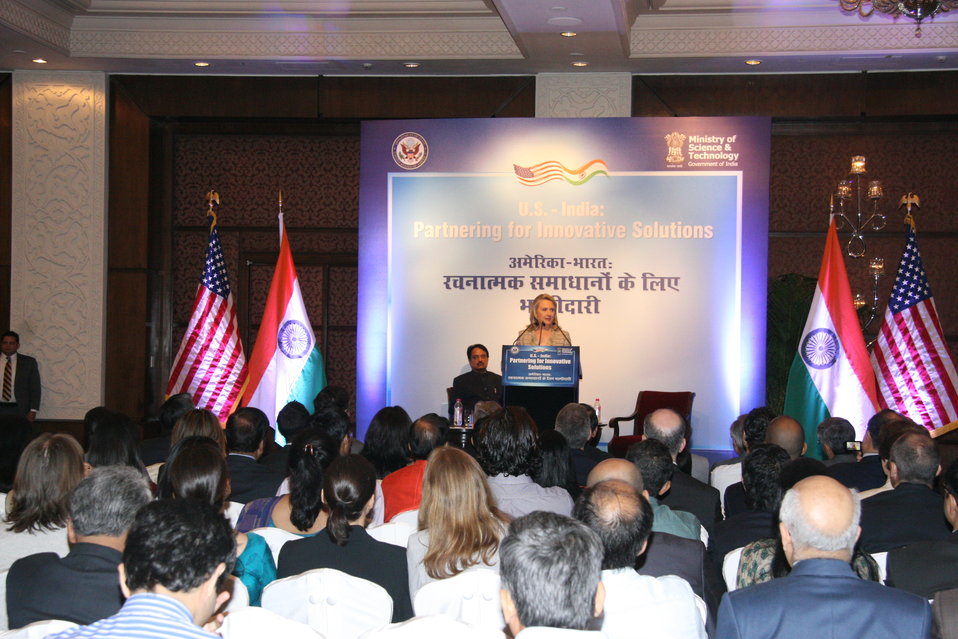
Secretary Clinton Delivers Remarks at an Innovation Partnerships Event

U.S. Secretary of State Hillary Rodham Clinton delivers remarks at the 'U.S.-India Partnering for Innovative Solutions' event in New Delhi, India, on May 8, 2012.